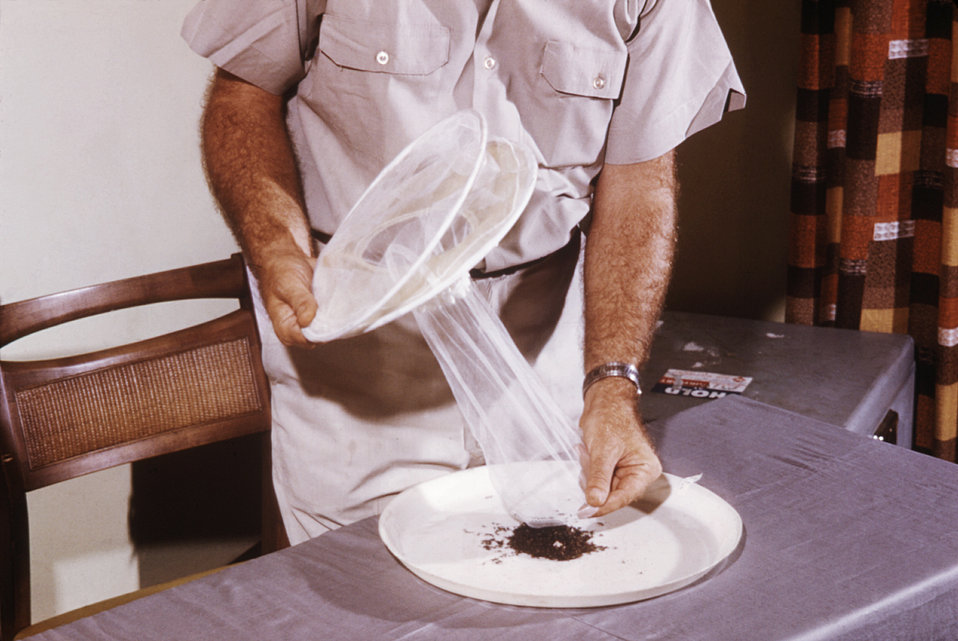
Once the collected mosquitoes have been thawed after being kept on dry ice, they are emptied from the mosquito collection bag.